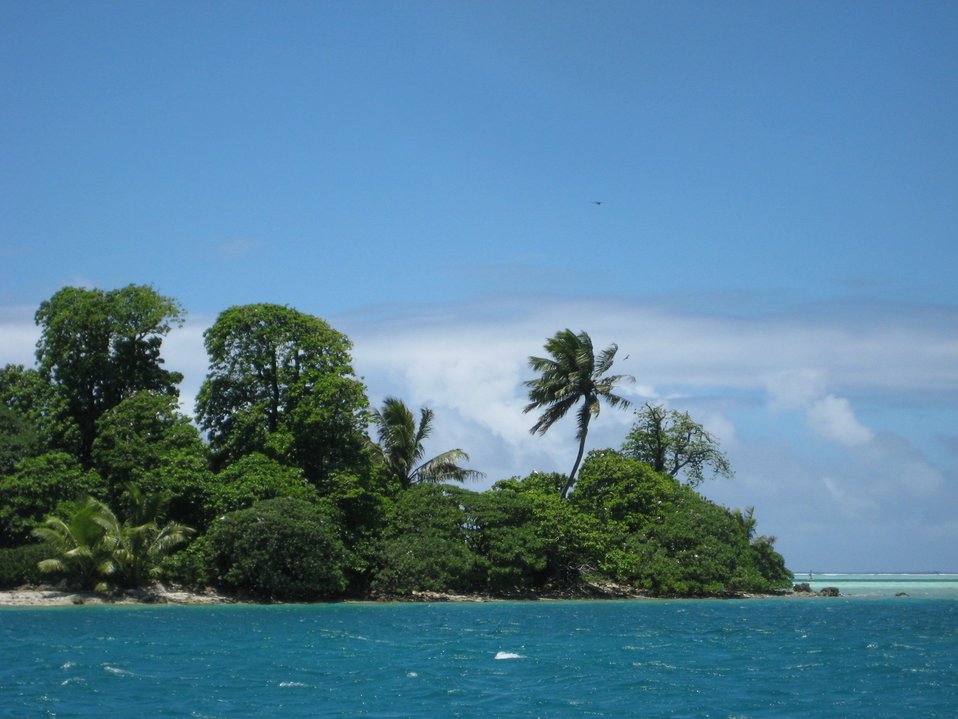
Vegetation including the ubiquitous palm trees of the tropical Pacific cover Palmyra Island and its associated offshore islets.